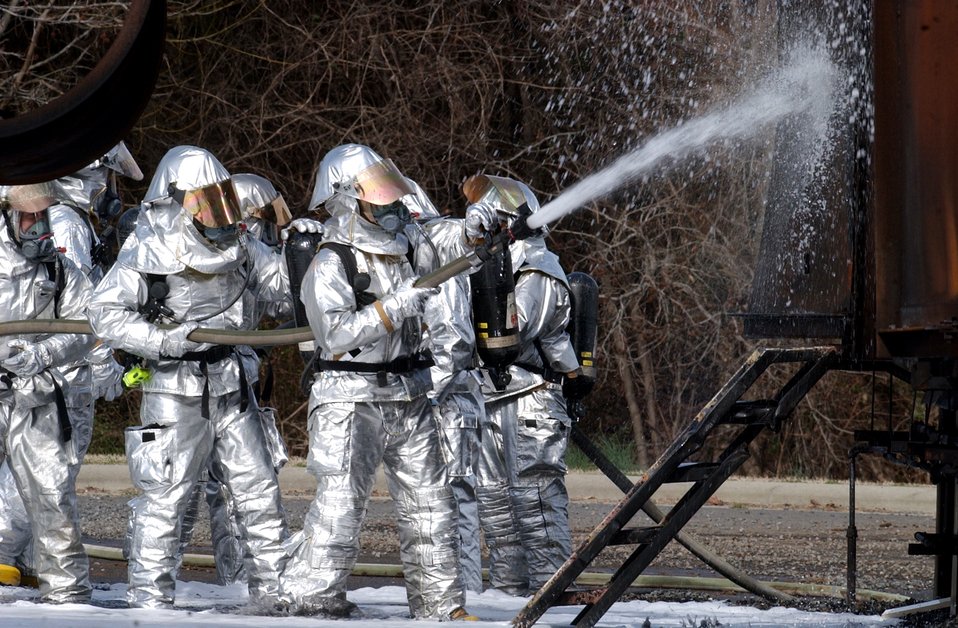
Feeling the heat

CHARLOTTE, N.C. (AFPN) -- Firefighters with the 916th Air Force Reserve Fire Protection Flight fight a fire during an exercise on a mock fuselage. The 916th, based at nearby Seymour Johnson Air Force Base, is performing their annual recertification course at the aircraft fire training center here. The center is jointly owned and operated by the city of Charlotte and the North Carolina Air National Guard.